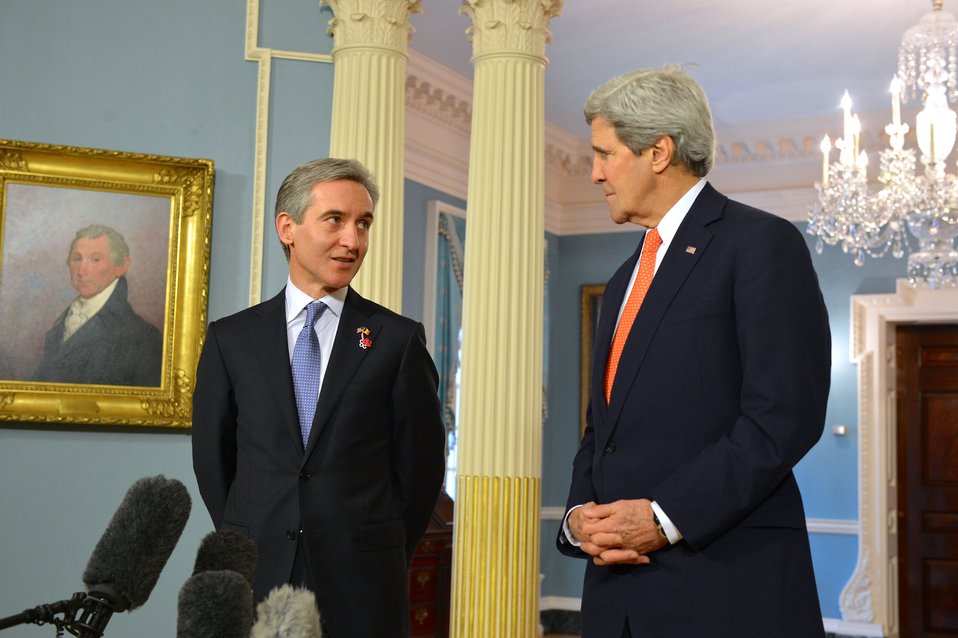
Secretary Kerry and Moldovan Prime Minister Leanca Address Reporters

U.S. Secretary of State John Kerry and Moldovan Prime Minister Iurie Leanca address reporters after their bilateral meeting at the U.S. Department of State in Washington, D.C., on March 3, 2014.